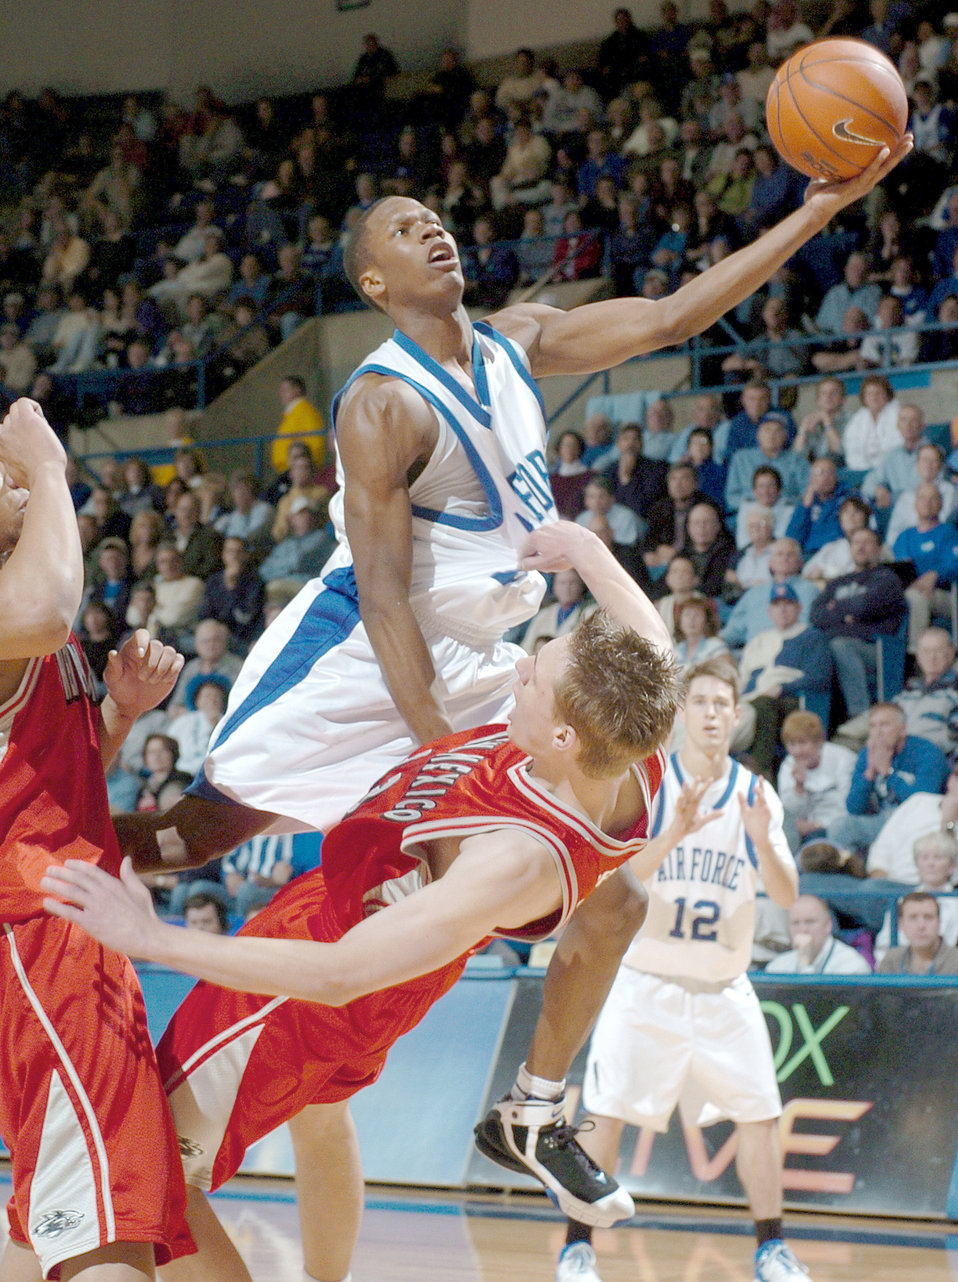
Antoine Hood

As a senior at the U.S. Air Force Academy Antoine Hood gets aggressive against New Mexico Feb. 22, 2006.